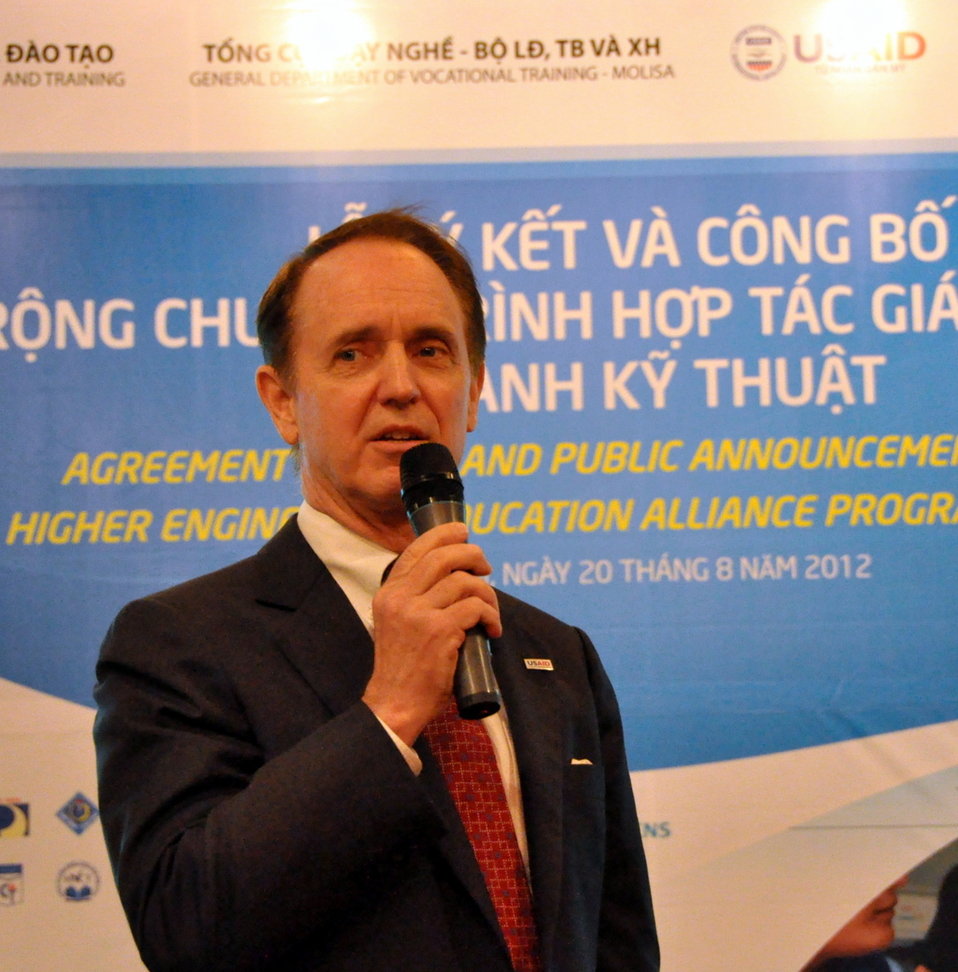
USAID Vietnam Mission Director Francis Donovan at the Higher Engineering Education Alliance Program Expansion Launch

Hanoi, August 20, 2012.